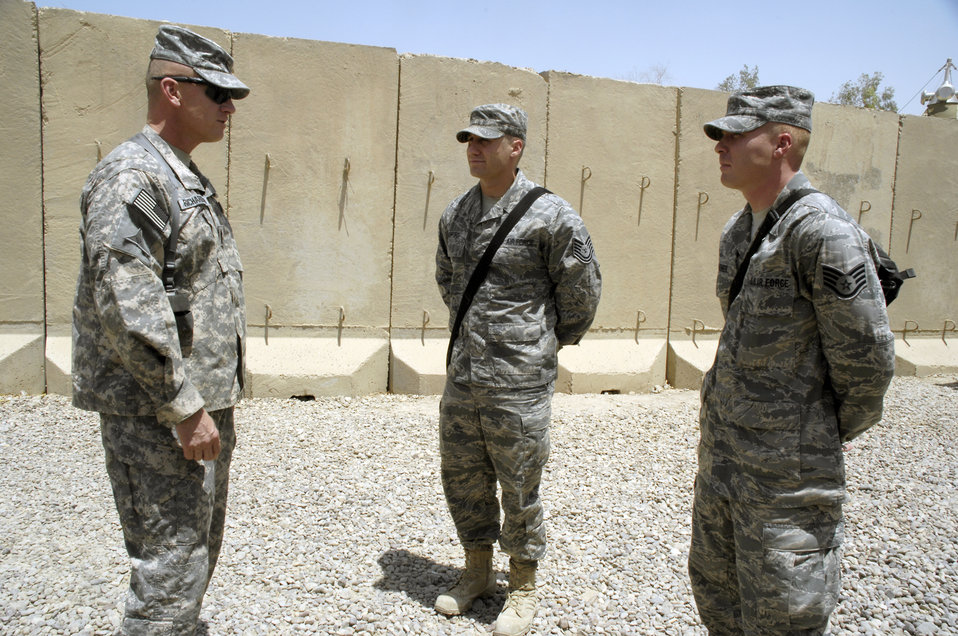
Two Airmen save Soldier's life outside gym

Army Sgt. Maj. Jerry Richardson (left) present coins recently on behalf of Army Brig. Gen. Gustave Perna and himself to Tech. Sgt. Aaron Gufford (center) and Staff Sgt. Jeffery Kirker (right) to say thanks for their quick reactions in saving Lt. Col. Mitchell Malone's life June 7, 2010, outside the Liberty Gym at Camp Liberty, Iraq. The presentation of a coin to someone who has done an outstanding job is a time-honored military tradition observed by all branches of the military. General Perna is the U.S. Air Force-Iraq J4 director. Sergeant Richardson is from U.S. Air Force-Iraq at Camp Liberty. Sergeants Gufford and Kirker are both of the 392nd Expeditionary Signal Battalion at Camp Liberty.